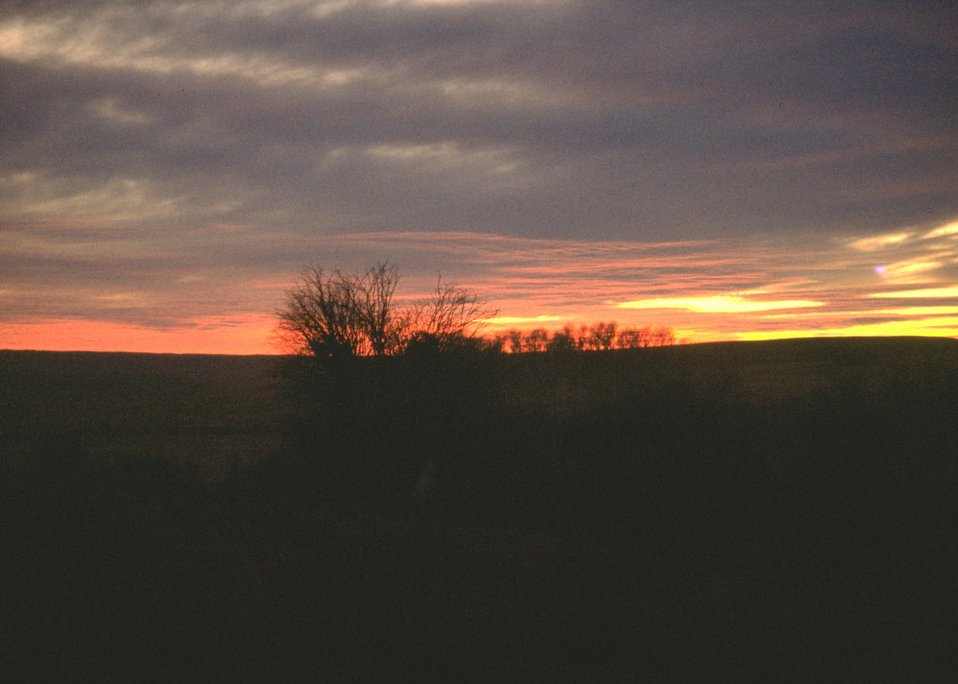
Sunset view.